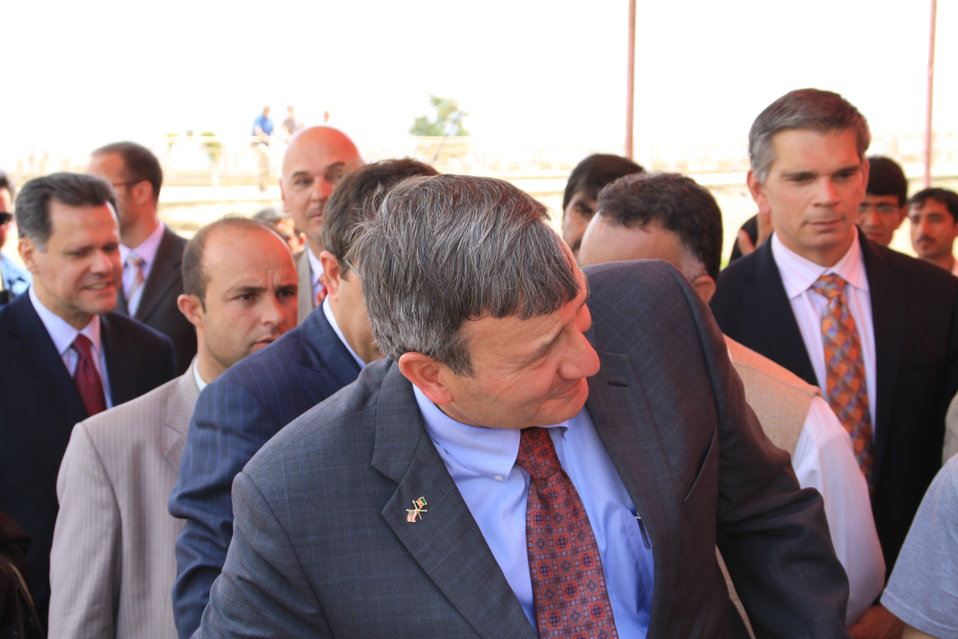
Baddam Bagh Farm